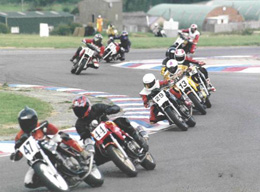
Honda CB500 Cup. Personal digital photo